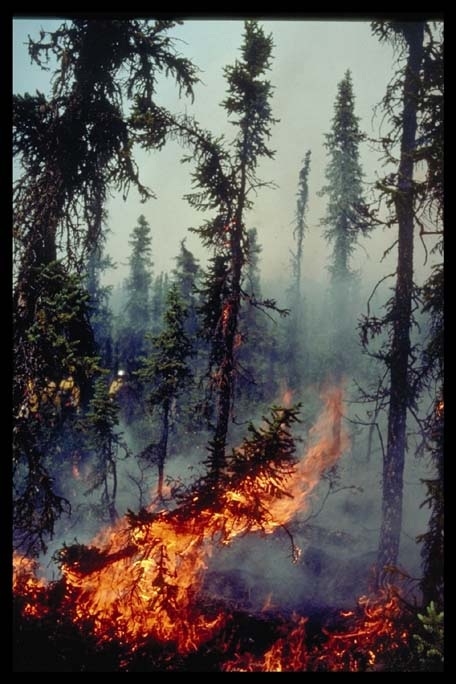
Wildland fire